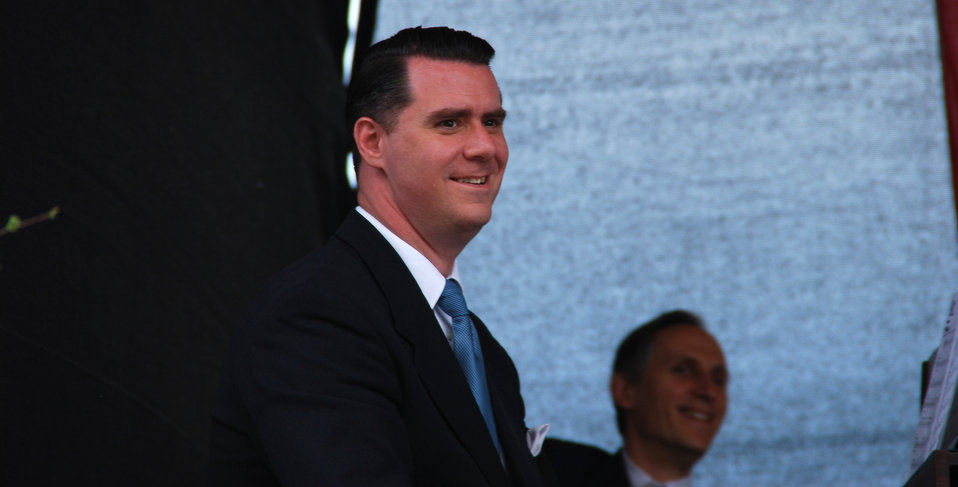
Andrej Hermlin, Deutscher Pianist und Bandleader